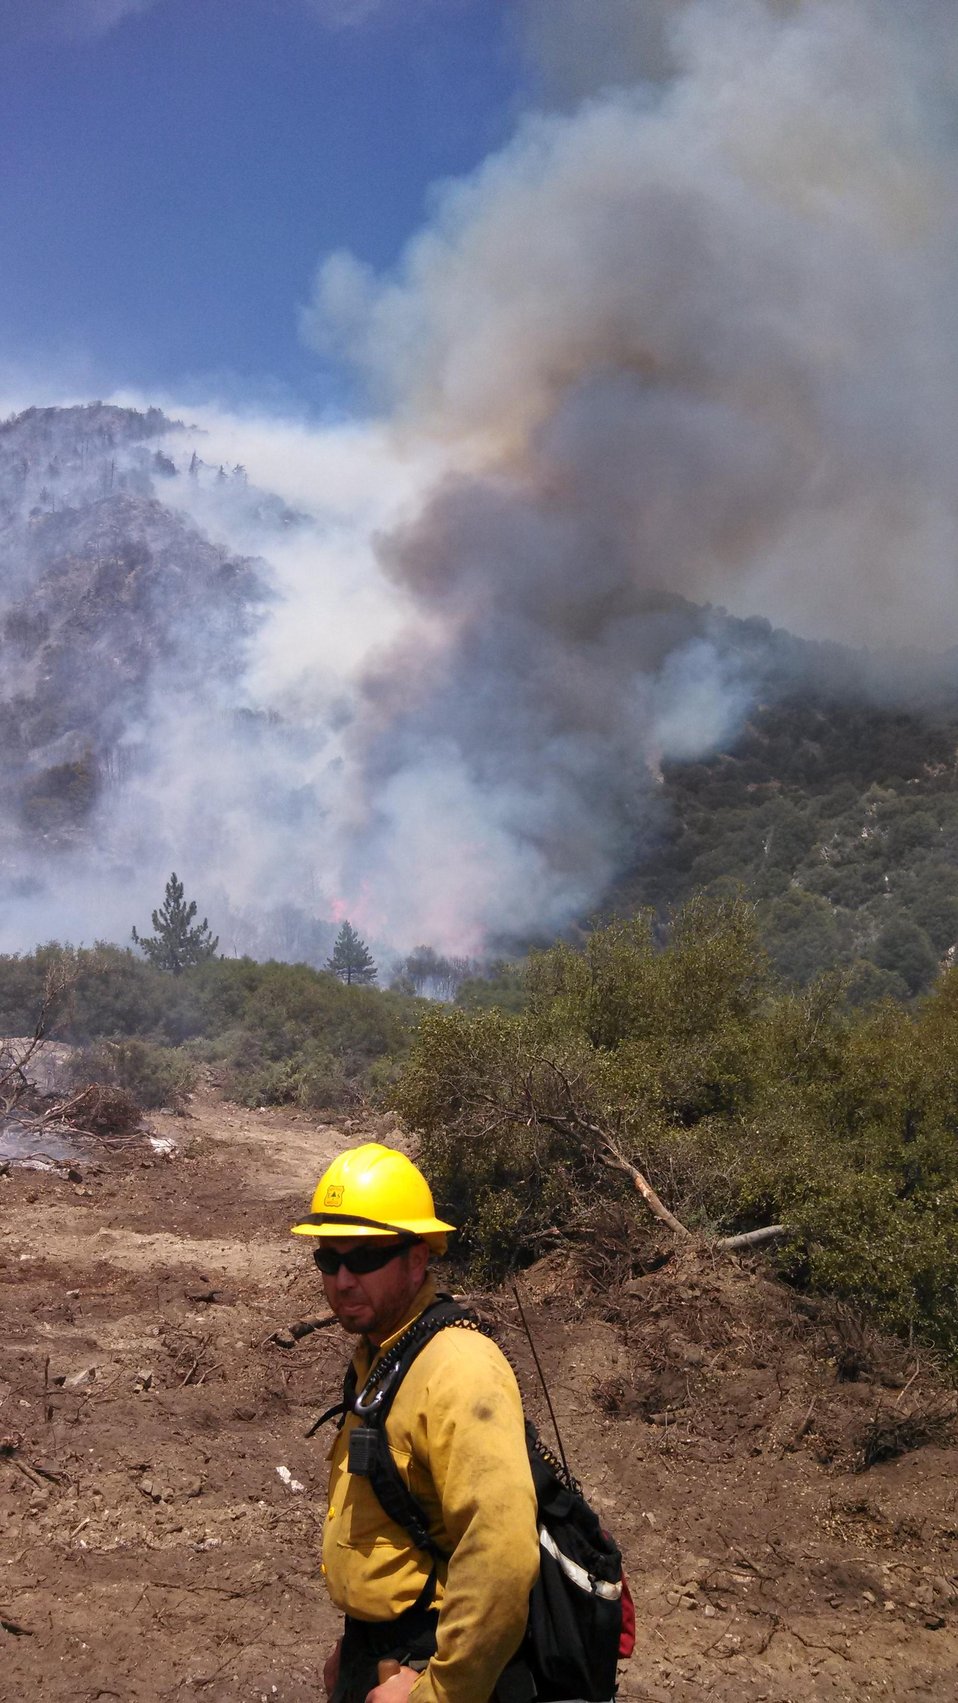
A Hathaway firefighter works the fire line on Jun. 12, 2013. The Hathaway Fire is east of Hathaway Canyon on the northern portion of the Morongo Indian Reservation in the San Gorgonio Wilderness near Palm Springs, CA began on started Jun. 9, 2013 and the cause is still to be determined. The fire has burned approximately 3, 825 acres and is 95% contained as of Jun. 25, 2013.